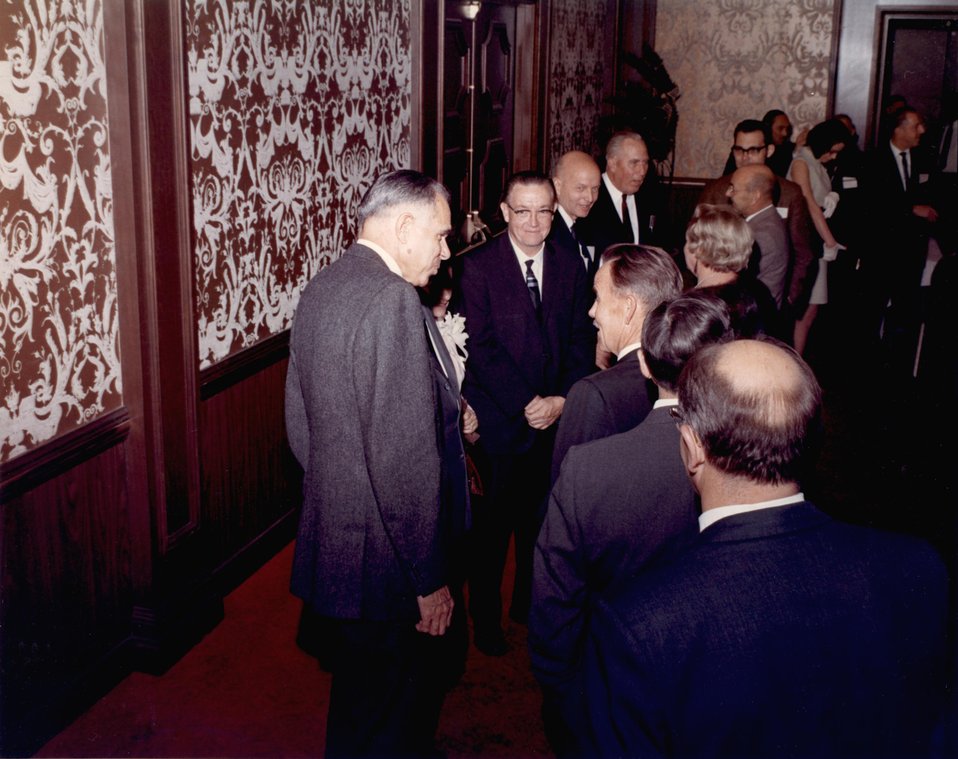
Enrico Fermi Award Ceremony. Imperial Ballroom. San Fransisco Hilton Hotel. 5:30 p.m., December 2, 1969. Fermi Award. Recipient: Walter Zinn. Date: Dec. 2, 1970.